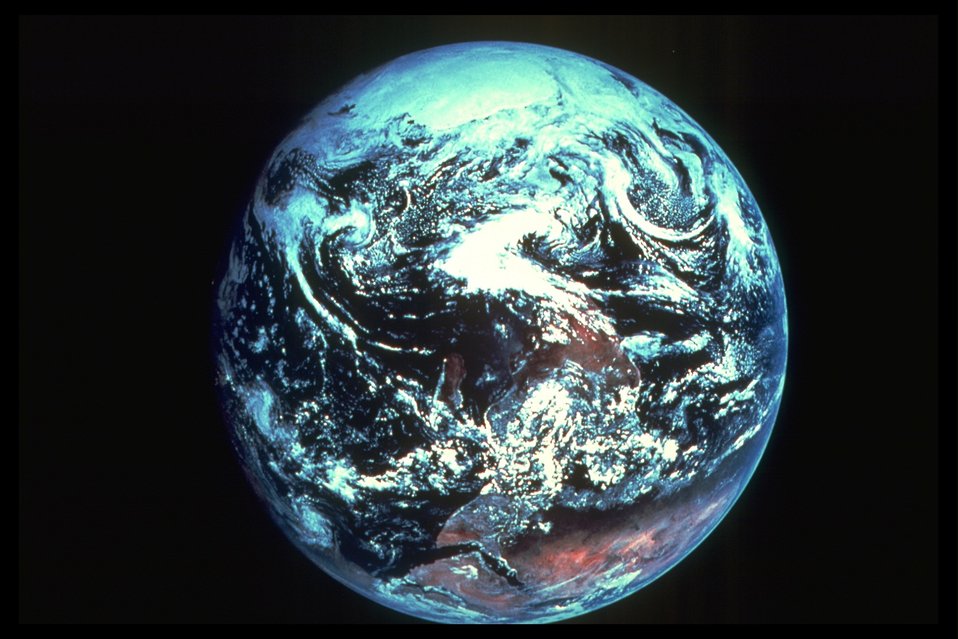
NASA picture of earth from space.